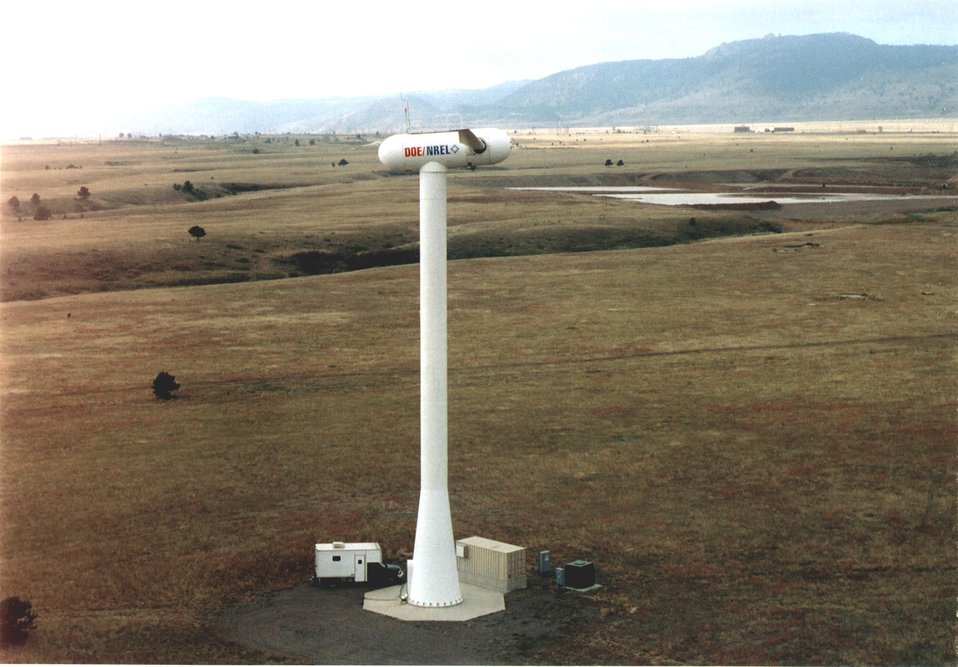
A WIND TURBINE INSTALLED AT NREL'S NATIONAL WIND TECHNOLOGY CENTER, GOLDEN, COLORADO.

DOE'S OFFICE OF ENERGY EFFICIENCY AND RENEWABLE ENERGY MANAGES THE FEDERAL WIND ENERGY PROGRAM. WIND ENERGY DIVERSIFIES THE NATION'S ENERGY SUPPLY AND TAKES ADVANTAGE OF A DOMESTIC RESOURCE. THE PROGRAM INCLUDES A COMPREHENSIVE WIND ENERGY RESEARCH PROGRAM, WIND TURBINE RESEARCH AND DEVELOPMENT, AND SUPPORT FOR UTILITIES, INDUSTRY, AND INTERNATIONAL WIND PROJECTS.